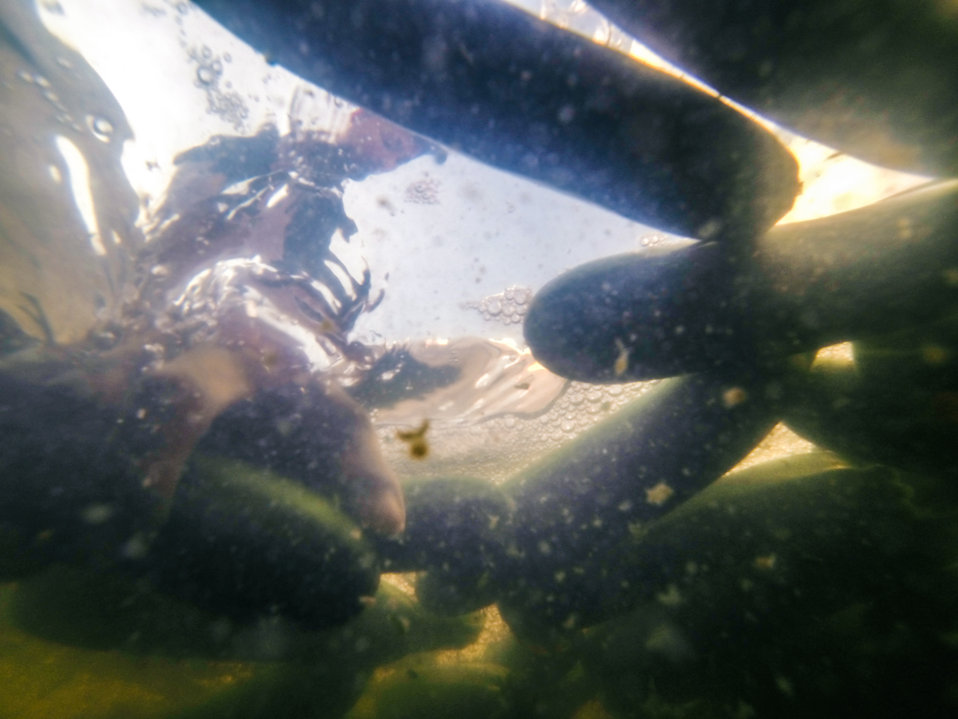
Migrant workers rinse away loose soil and bits of squash blossoms before packing the just-picked green zucchini squash, in Mechanicsville, VA on Friday, Sept. 20, 2013.